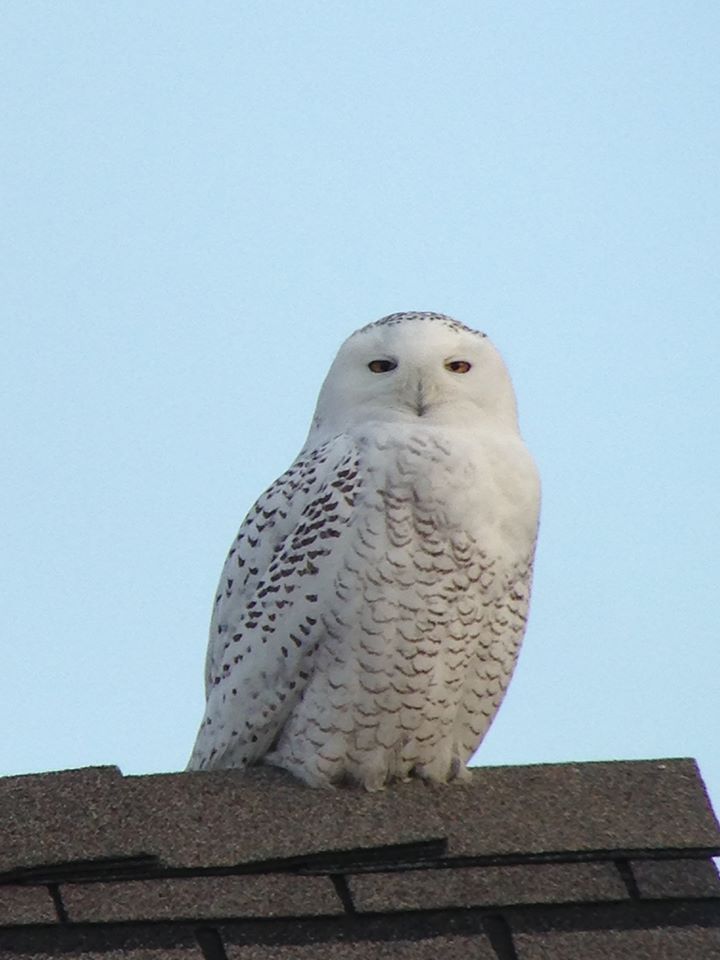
Edwin B. Forsythe Refuge

Atop the visitor center at Edwin B. Forsythe National Wildlife Refuge, NJ.